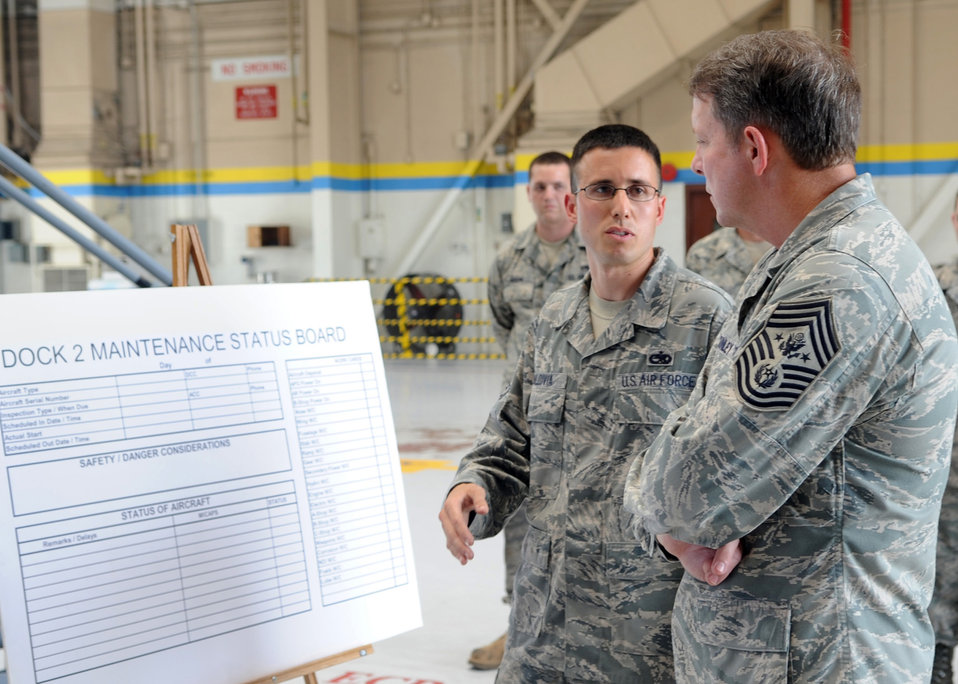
CMSAF McKinley begins, ends Air Force career at Seymour

Staff Sgt. Justin Baldivia, 4th Equipment Maintenance Squadron, explains hydraulic purification capabilities for the F-15E Strike Eagle to Chief Master Sgt. of the Air Force Rodney McKinley on Seymour Johnson Air Force Base, June 12. Chief McKinley is the 15th CMSAF and serves as adviser to the Chief of Staff and the Secretary of the Air Force on issues regarding the enlisted force.